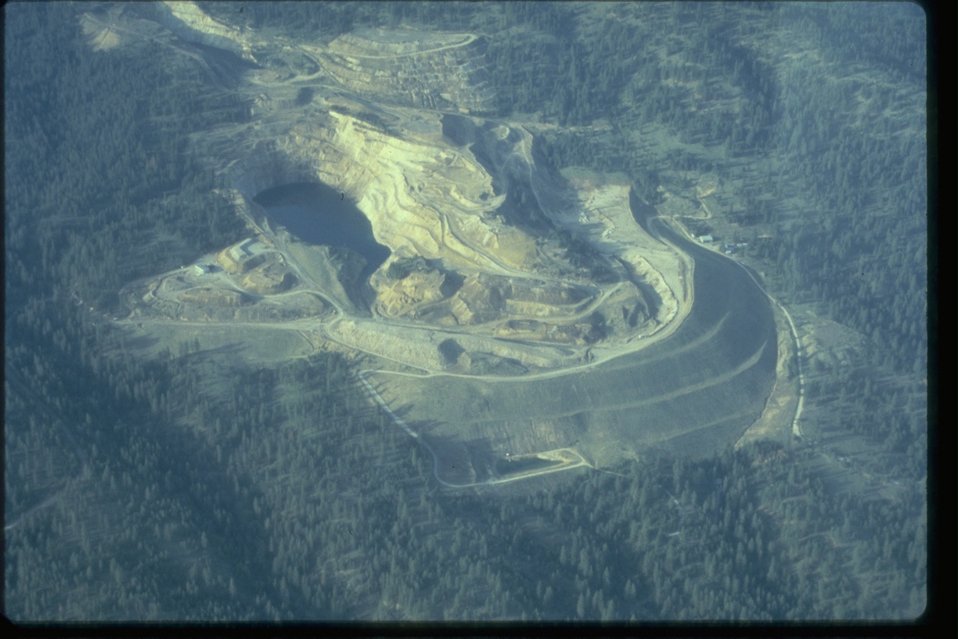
Midnite Uranium Mine in Stevens County, Washington, before reclamation.